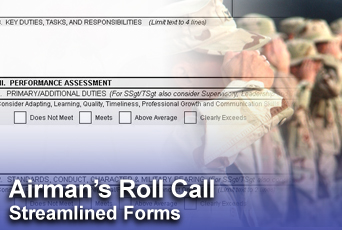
Latest Roll Call addresses performance forms

Air Force officials have approved new performance report forms that incorporate fewer lines and a section to document annual fitness results. For more, view this week's Airman's Roll Call.